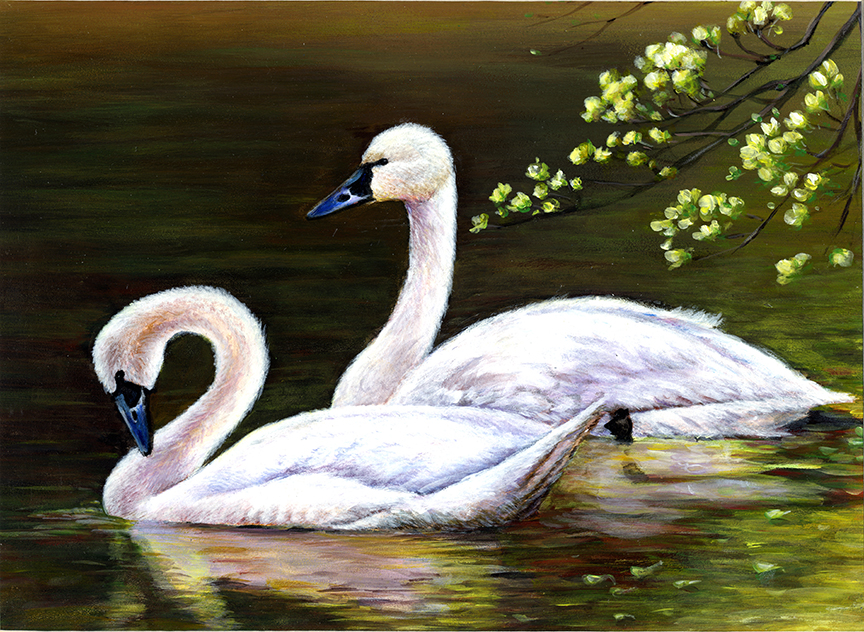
JRDuck2013MD

2013 Junior Duck Stamp Best of Show-Maryland